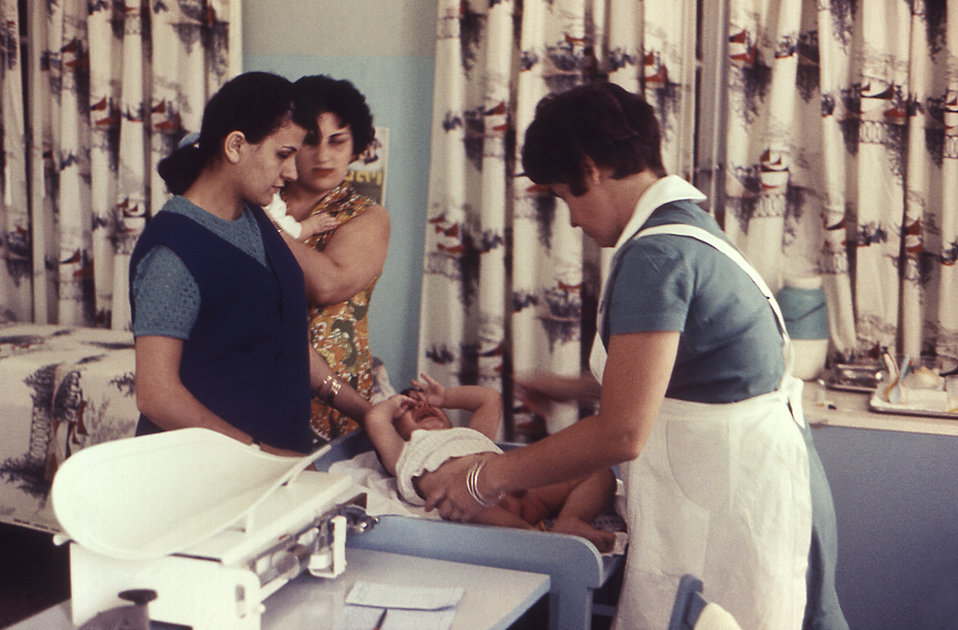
This 1969 image depicted two mothers who were seeking the assistance of a nurse inside an Israeli Well-Baby clinic. At this point in the visit, the nurse was conduction an examination of one of the infants while the child was laying on his back. See PHIL 14635, for another view of this healthcare interaction.